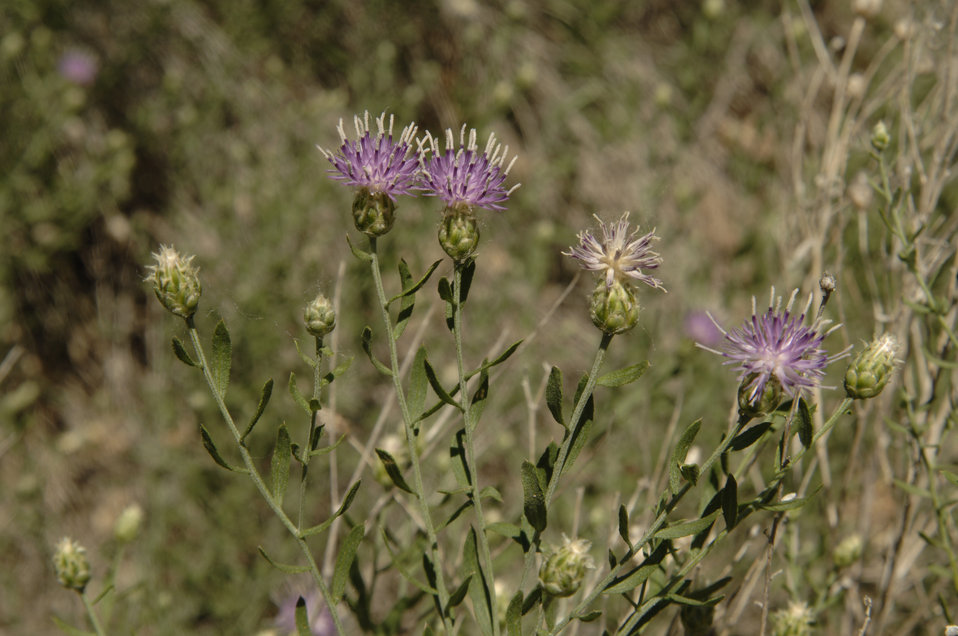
The Russian Knapweed is an invasive species that has invaded pastures, degraded croplands, rangeland, roadsides, riparian areas, and irrigation ditches in New Mexico. Invasive species are organisms that are non-native to an ecosystem and whose introduction causes economic, social, or environmental harm. The U.S. Department of Agriculture’s (USDA) Cooperative State Research, Education, and Extension Service (CSREES) is actively engaged in the battle against invasive species through leadership, grant opportunities, and collaboration with partners.